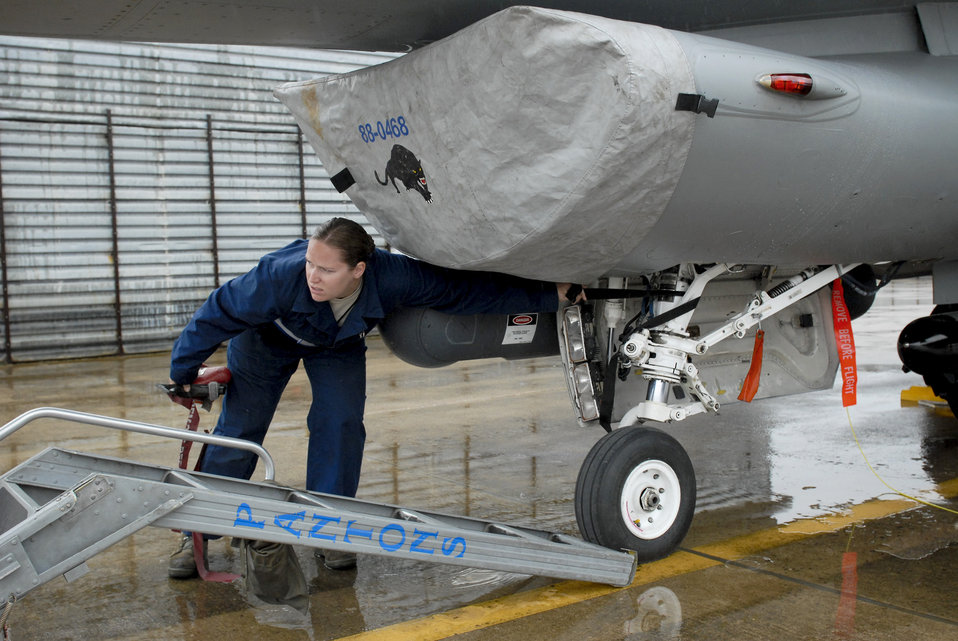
on the job